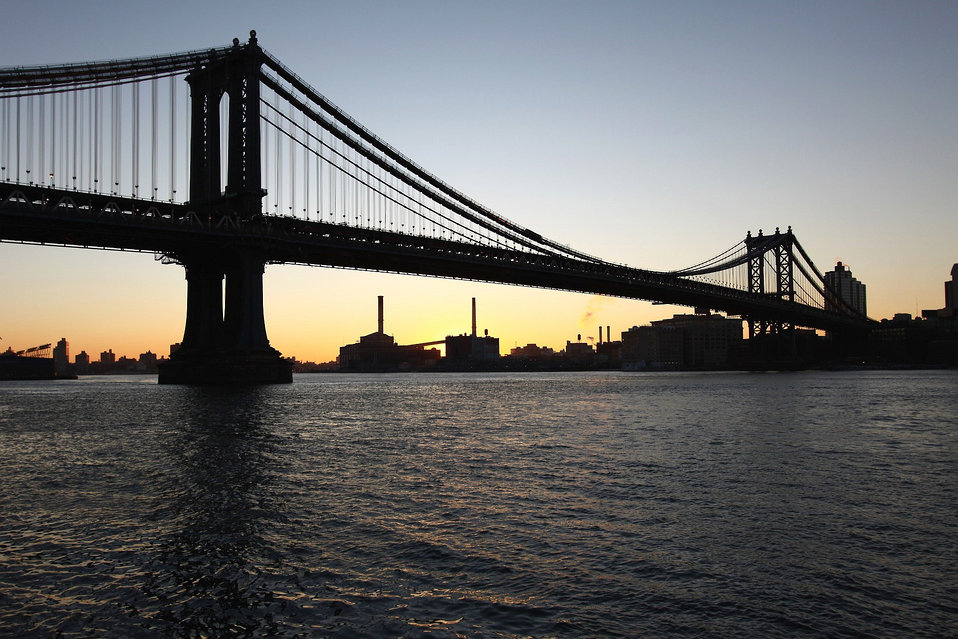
It dawns

Manhattan bridge against the morning sky.